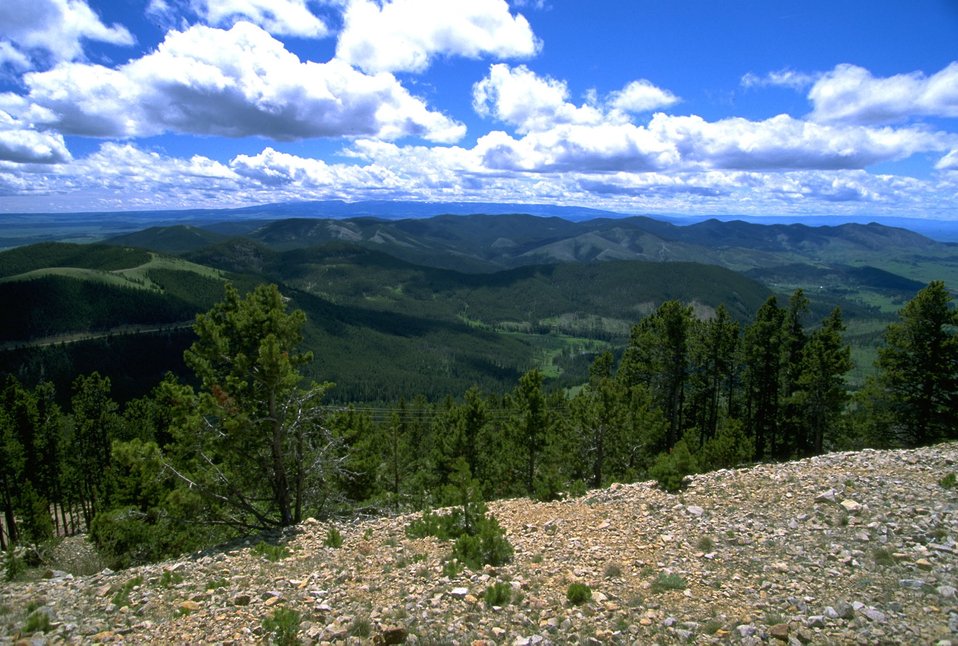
Looking down on scenery in the Judith Mountains